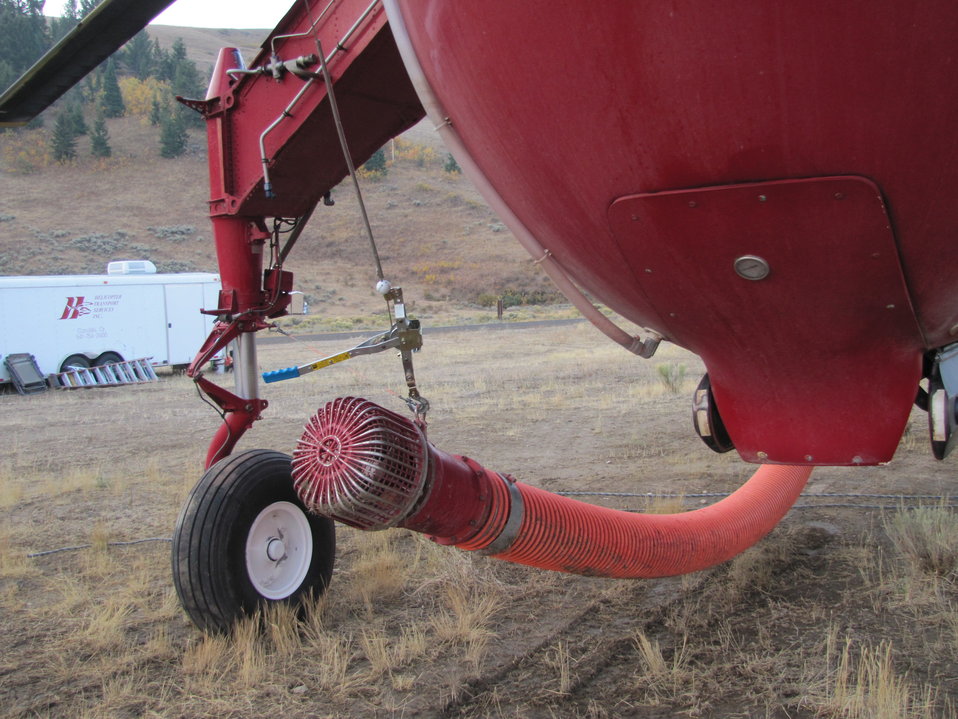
Snorkels Aren't Just For Scuba Diving

A close-up view of a 'snorkel,' or pump driven, large diameter soft hose. While in the air, the helicopter hovers over the water or retardant source with the end of the snorkel immersed. The pump then draws up the liquid and fills the fixed tank attached to the belly of the helicopter. The water or retardant is then transported and dropped on the fire.